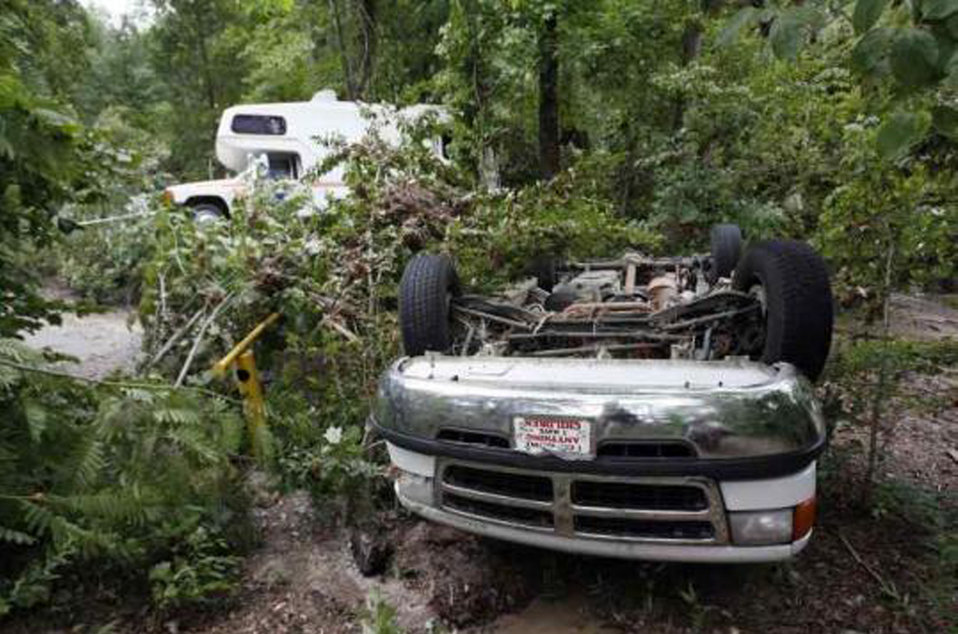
Arkansas Flood Photo of Fliiped Van